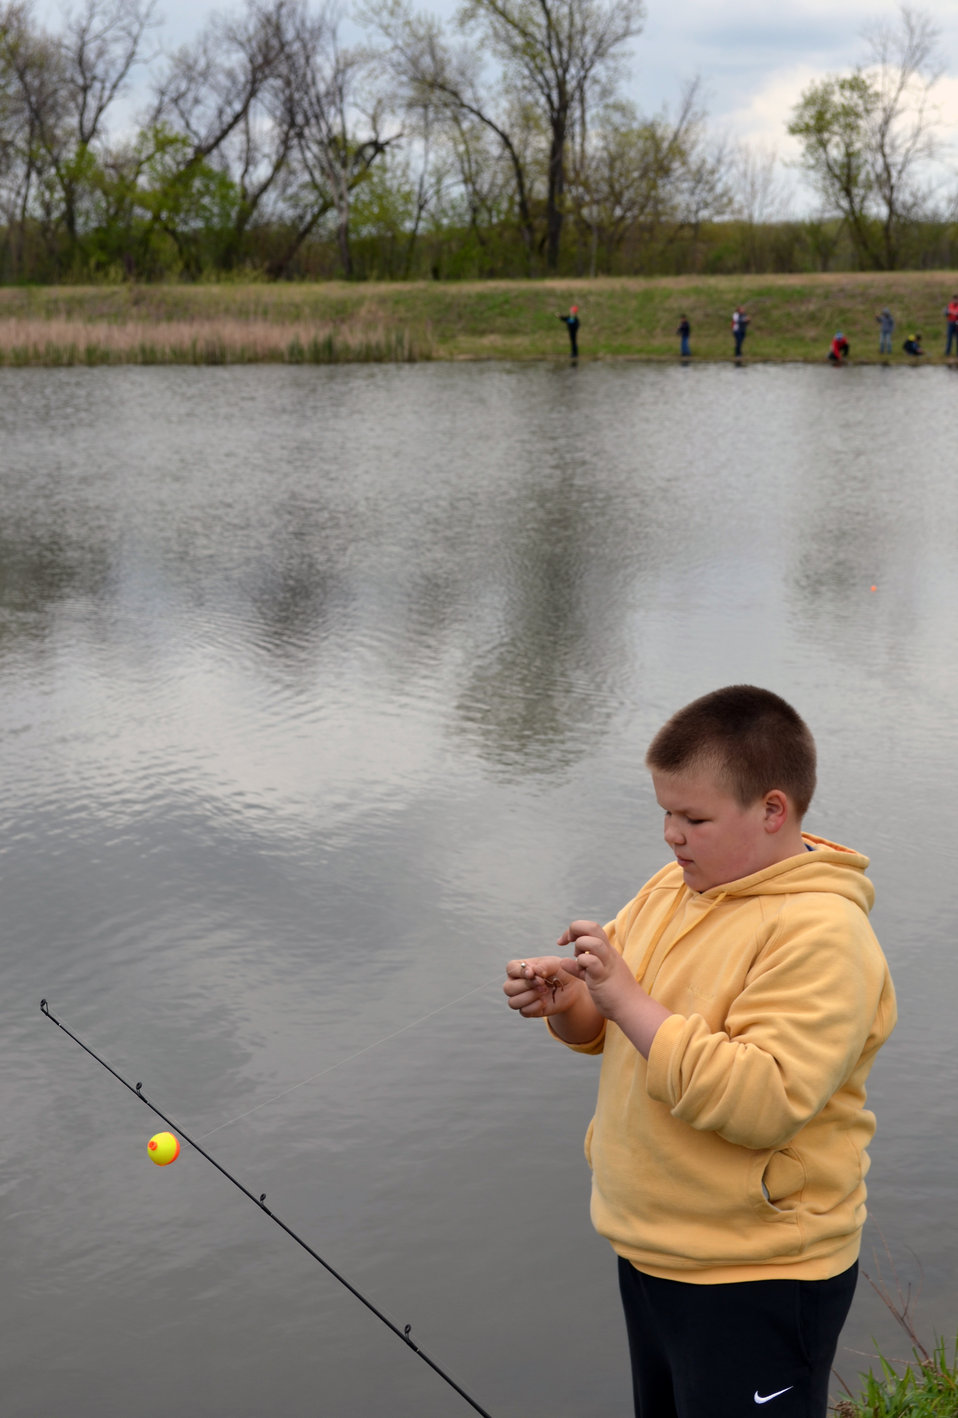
Prepping the worm for fishing